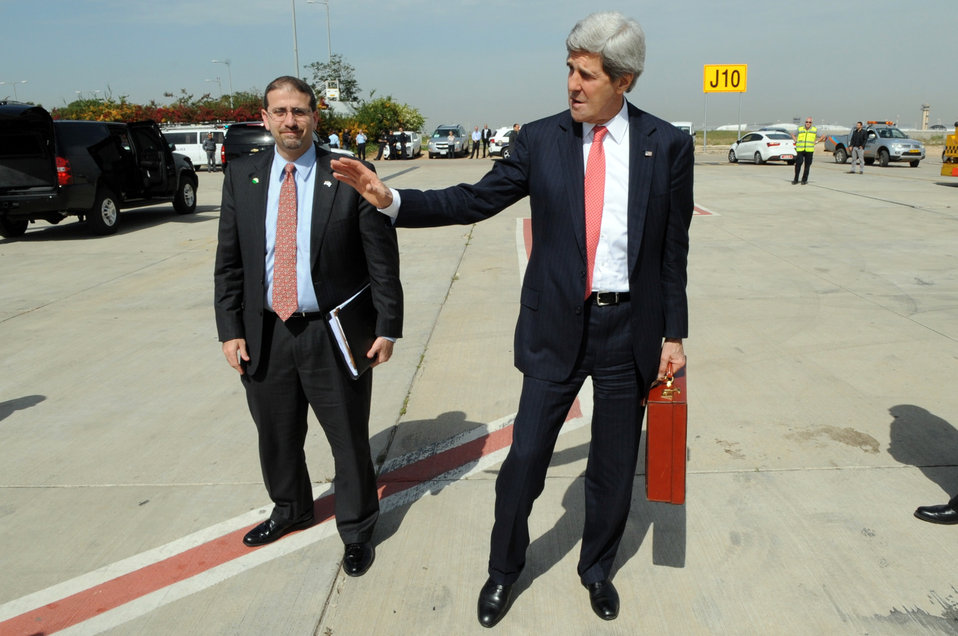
Secretary Kerry Leaves Israel After Middle East Peace Talks

Escorted by U.S. Ambassador Daniel Shapiro, U.S. Secretary of State John Kerry waves goodbye as he prepares to depart Tel Aviv, Israel, on April 1, 2014, after his latest talks with Israel and Palestinian Authority peace negotiators.